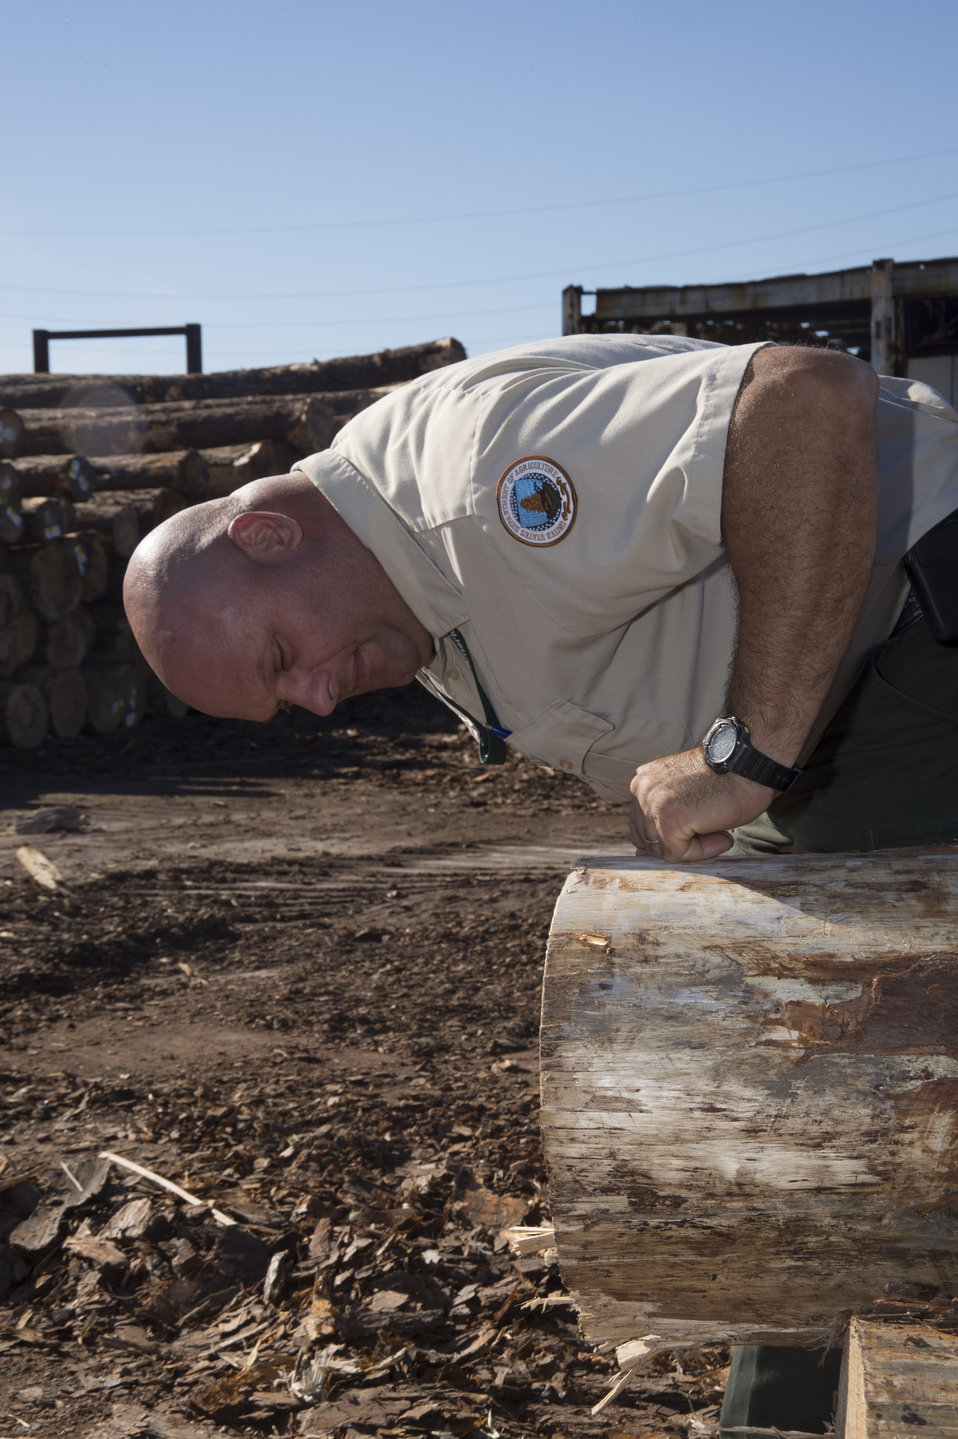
U.S. Department of Agriculture’s (USDA) Animal and Plant Health Inspection Service (APHIS) employee inspects fumigated logs near the Port of New Orleans in New Orleans, LA on Wednesday, Nov. 20, 2013. The fumigation process prevents the spread of any bacteria or insect that might cause harm to a foreign country’s agriculture.